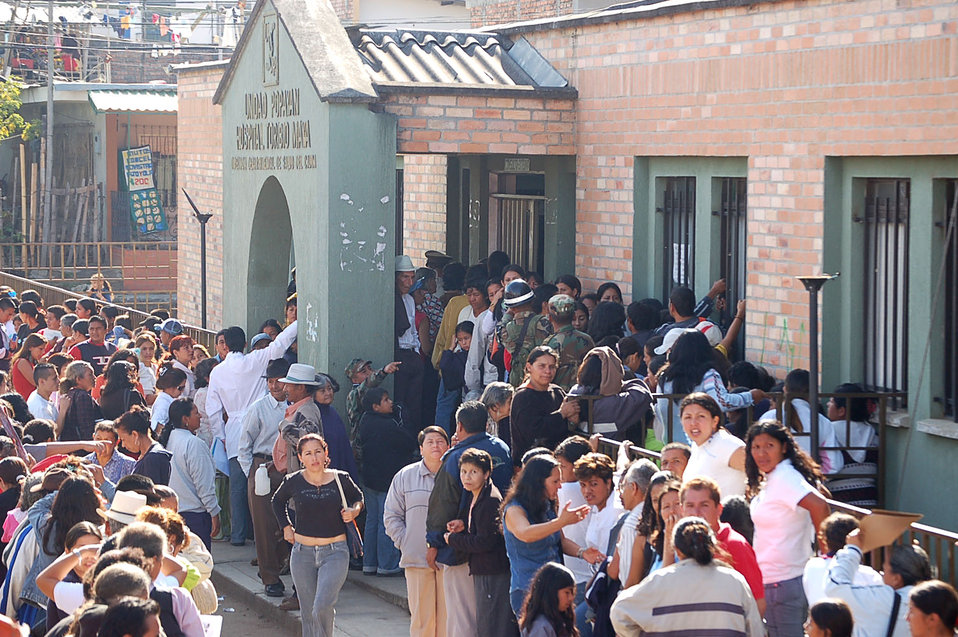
Airmen provide medical assistance in Colombia

People gather outside the Hospital Toribo Maya in Popayan, Colombia, Sept. 12 to receive treatment from a U.S. medical team performing a medical readiness training exercise.